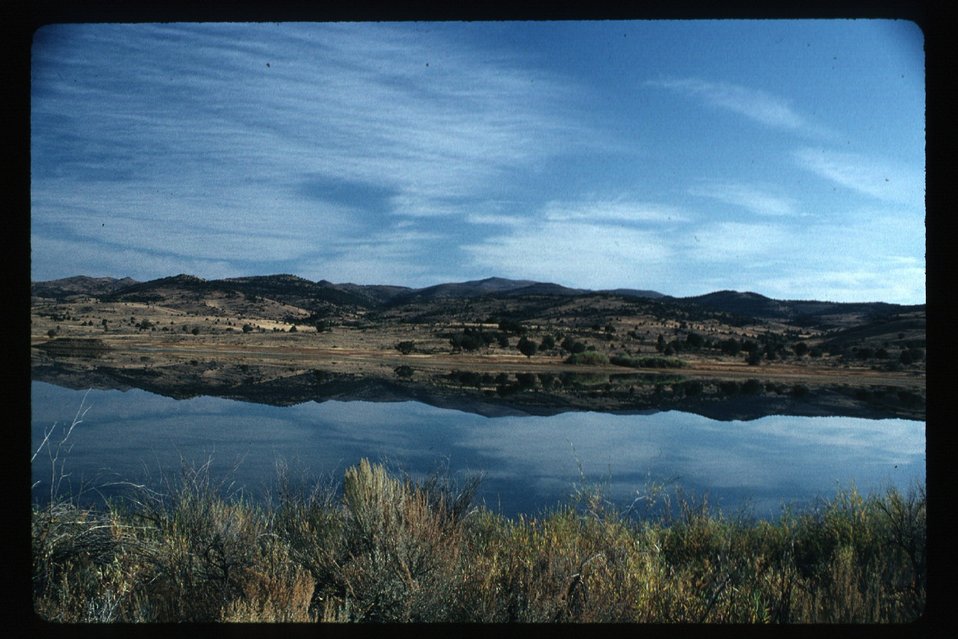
South East of Jordan Valley Scenic Owyhee Field Office LSRD Lower Snake River District